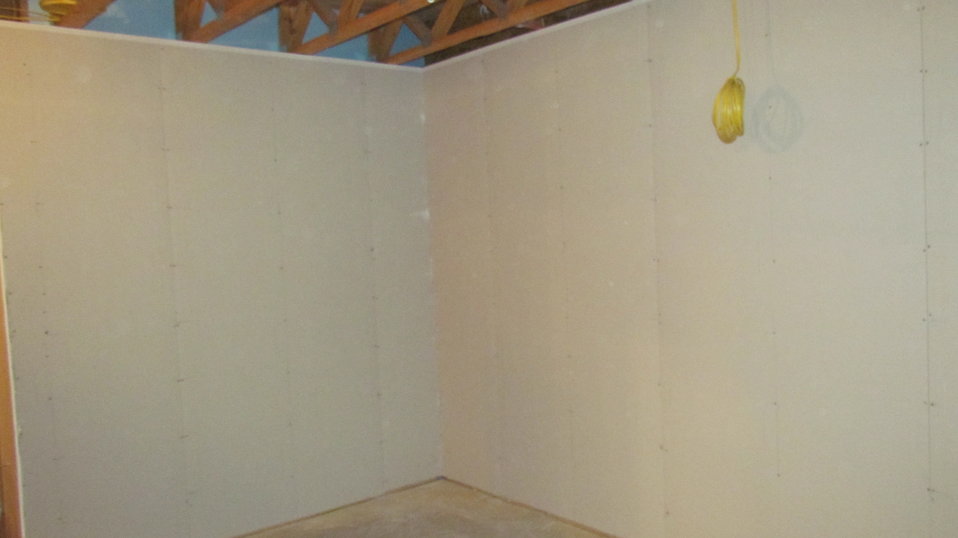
Insulation of basement walls complete. Drywall installed over basement insulation.